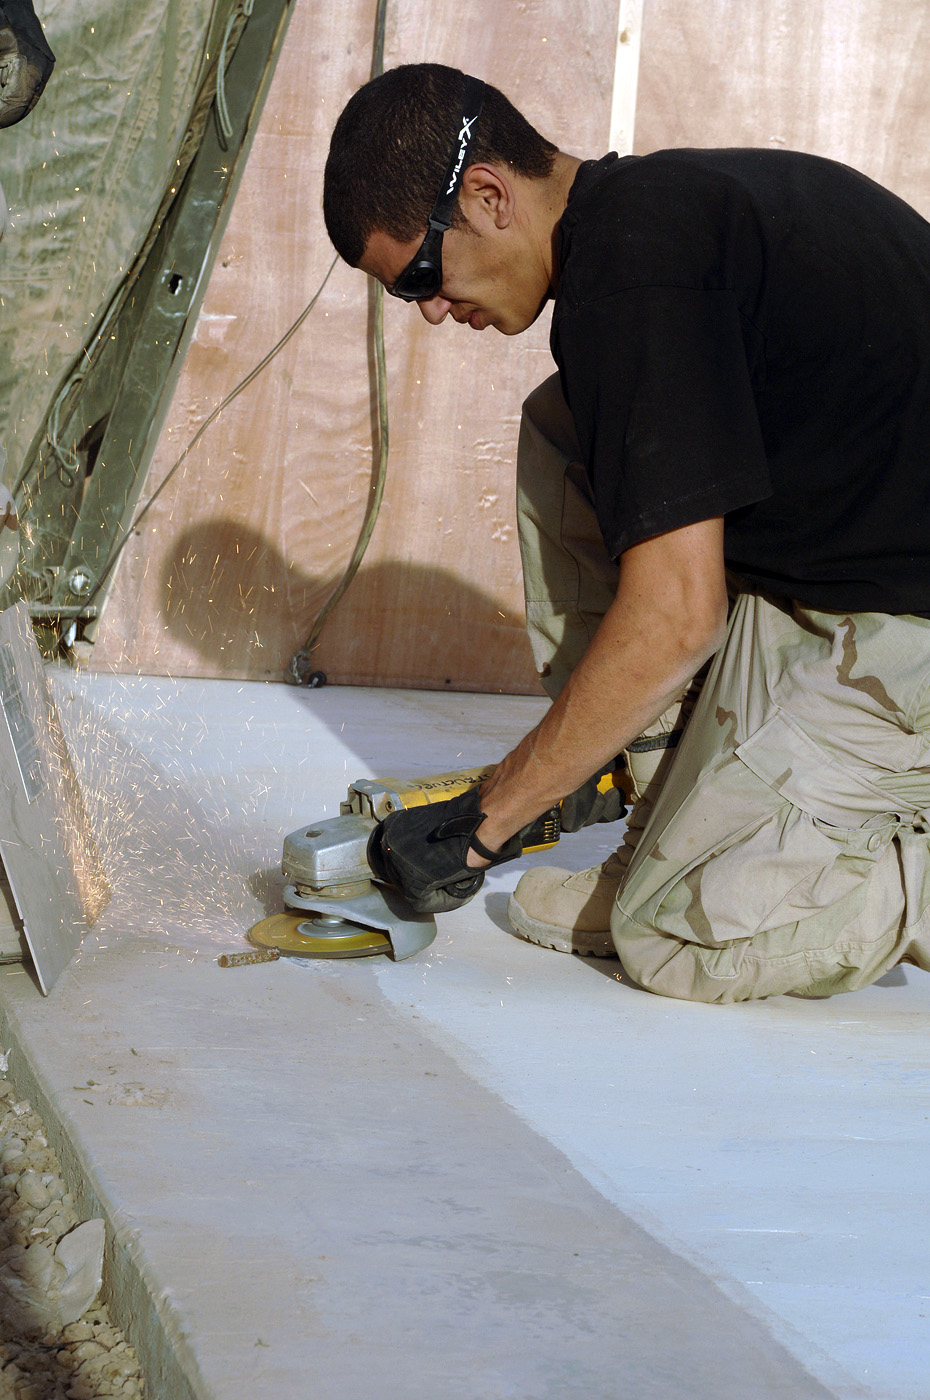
Operation Iraqi Freedom

BALAD AIR BASE, Iraq -- Airman 1st Class Jeremie Wilson prepares a concrete pad during the renovations at the Air Force theater hospital here. Airman Wilson is with the 332nd Civil Engineering Squadron.